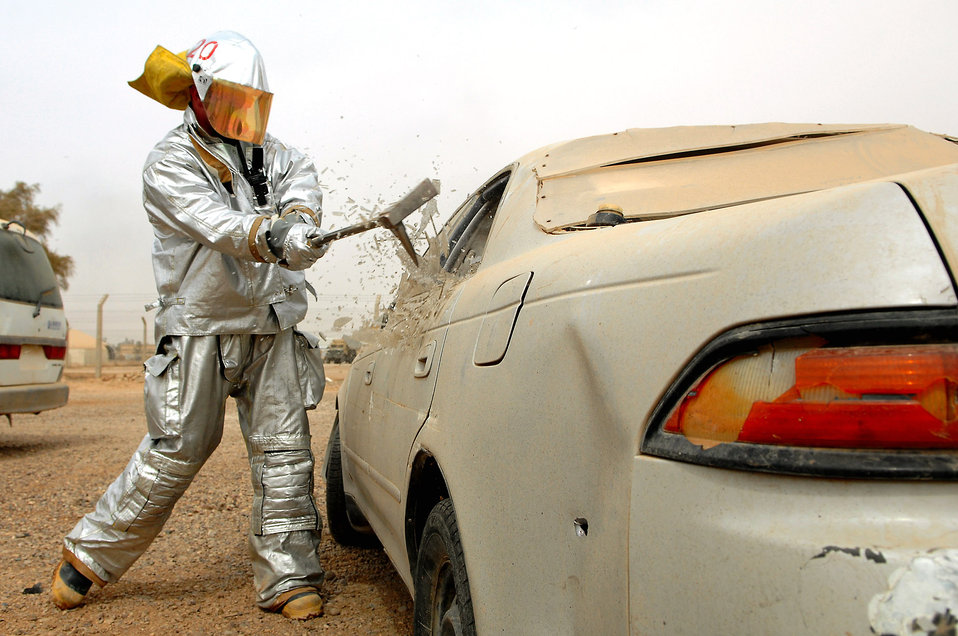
Bustin' in

Airman 1st Class Gregory Stallings breaks a window during vehicle extrication training session April 5 at Balad Air Base, Iraq. During the training, Army and Air Force firefighters honed their abilities to rescue people trapped in vehicles and other confined spaces. Working jointly allows the firefighters to coordinate their efforts when responding to emergency situations. Airman Stallings is a 332nd Expeditionary Civil Engineer Squadron firefighter deployed from Minot Air Force Base, N.D.